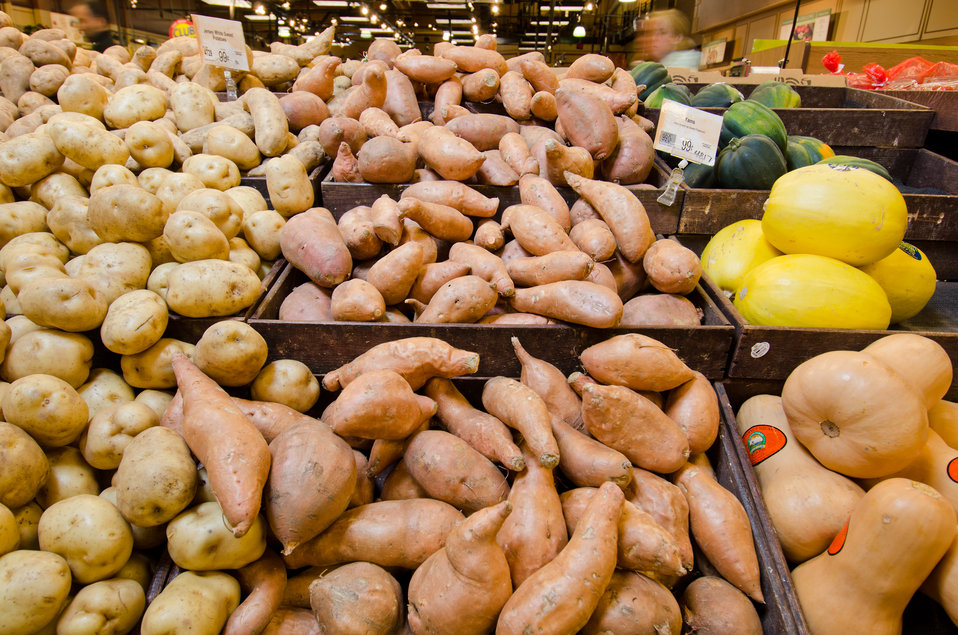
Potatoes in the produce section at a grocery store in Fairfax, Virginia, on March 3, 2011.